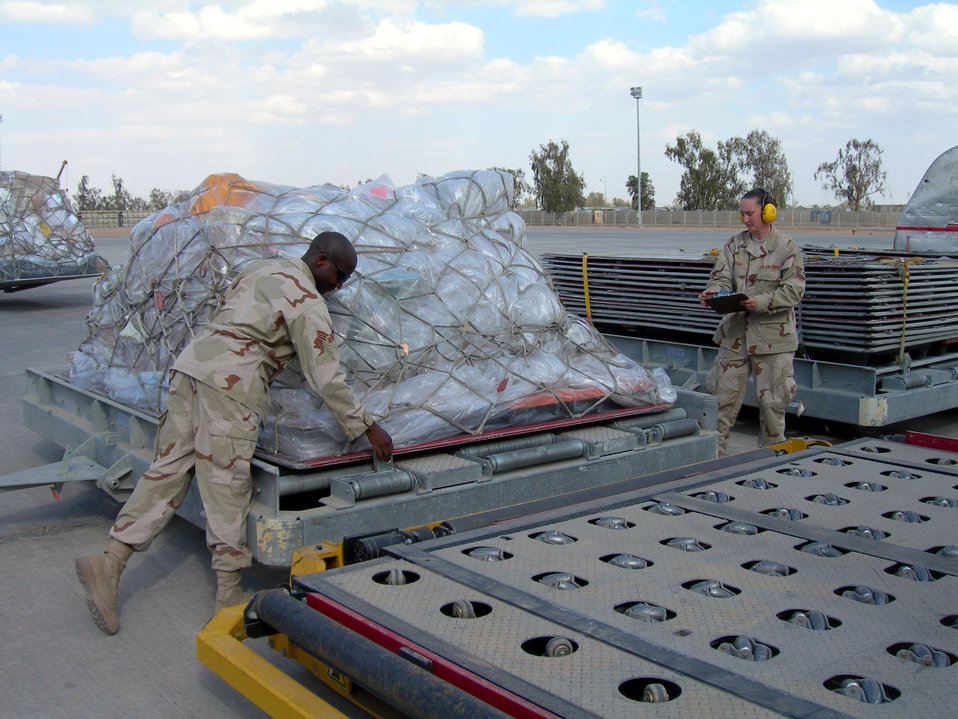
Airmen provide 1st class postal service to thousands

Senior Airman Brandon Reynolds (left) and Tech. Sgt. Amanda Snyder work with contractors to load outgoing mail onto a cargo aircraft at Balad Air Base, Iraq. The Joint Military Mail Terminal sends out approximately 85,000 pounds of outgoing mail each week. Every day two aircraft deliver and pick up an average of 18 pallets of mail to and from the base. The Airmen are assigned to the 332nd Expeditionary Communications Squadron.